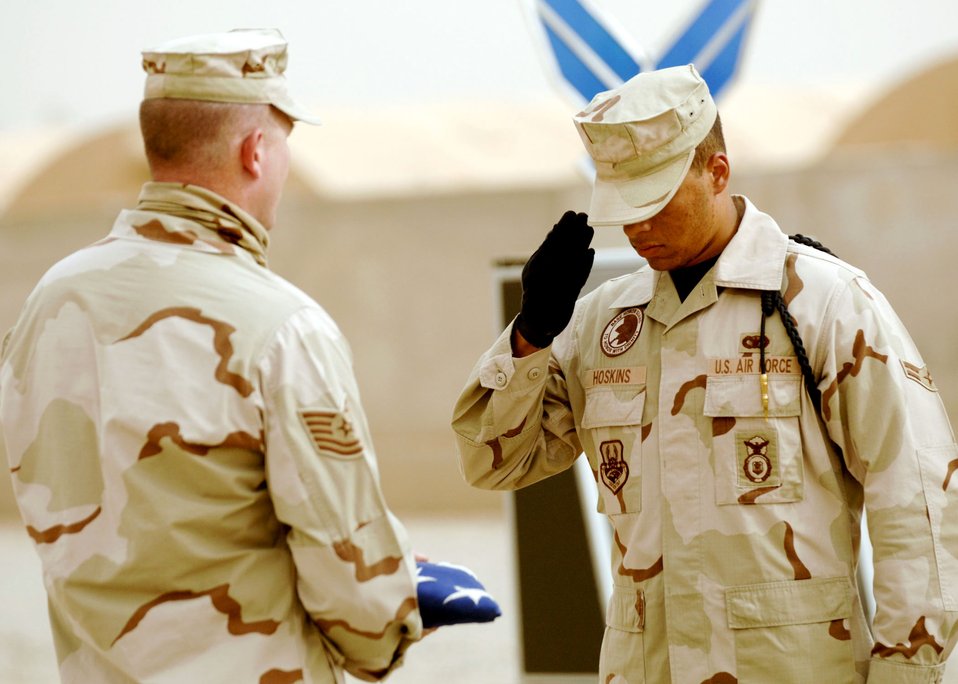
Honoring a fallen Airman

Airman 1st Class Derik Hoskins salutes the flag after presenting it to Tech. Sgt. Clinton Taylor during a fallen Airmen ceremony May 28 in remembrance of Staff Sgt. John Self at Ali Air Base, Iraq. The Airmen, both members of the 407th Expeditionary Security Forces Squadron, were participating in the ceremony honoring the life of Sergeant Self, a security forces member assigned to the 732nd Expeditionary Security Forces Squadron at Camp Bucca, Iraq, who was killed May 14 by an improvised explosive device while on patrol.